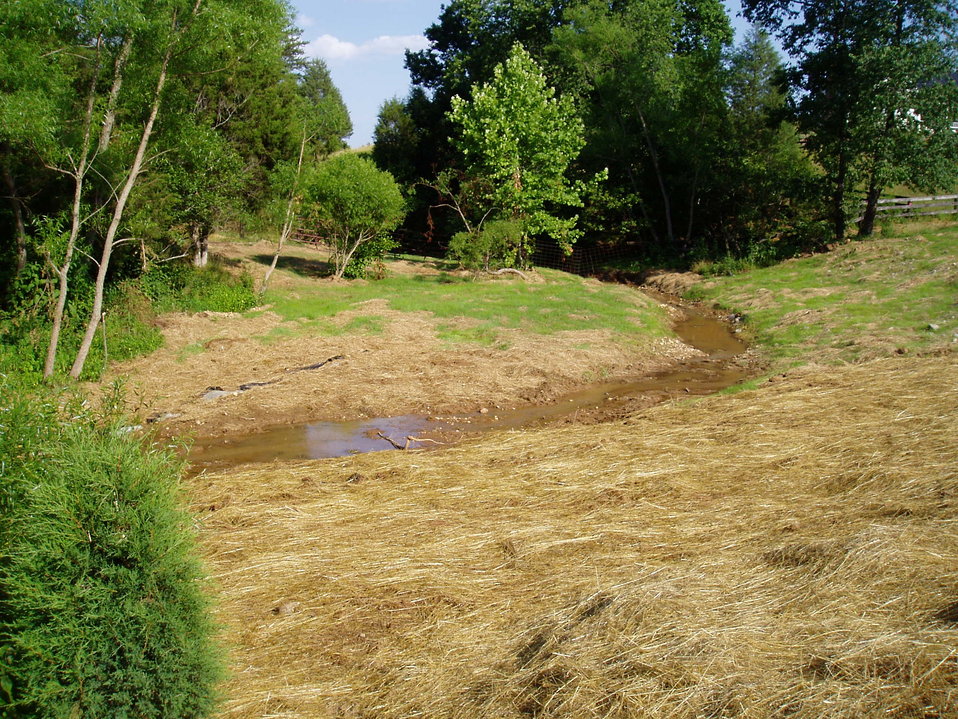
Beaver Run Eroded Streambank After Construction

This photo shows a previously eroded streambank after habitat restoration practices were implemented. The bank was re-graded and protected by seeding and mulching.